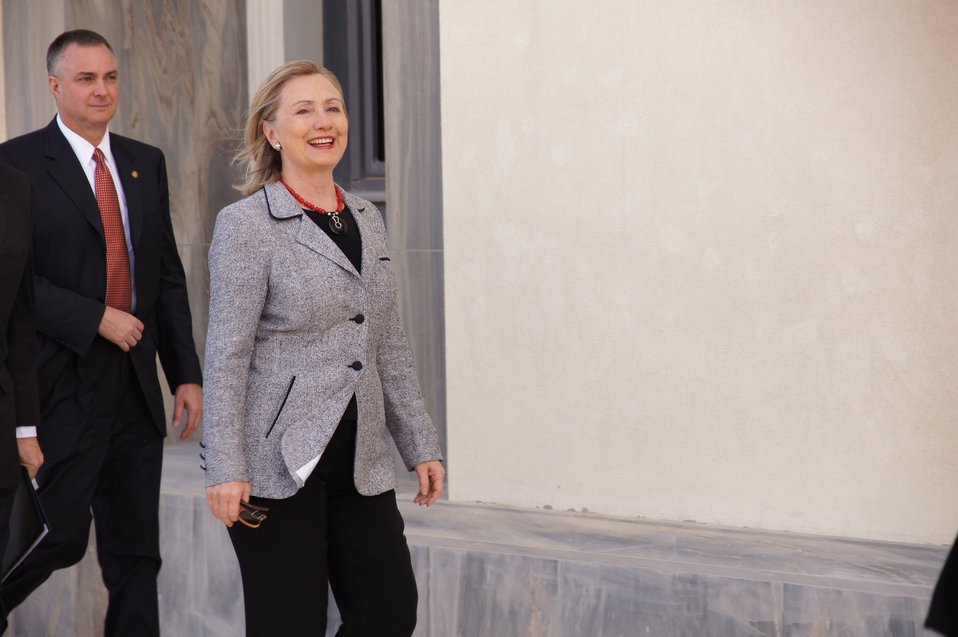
Secretary Clinton Walks to a Meeting

U.S. Secretary of State Hillary Rodham Clinton walks to a meeting in Doha, Qatar, on January 13, 2010.